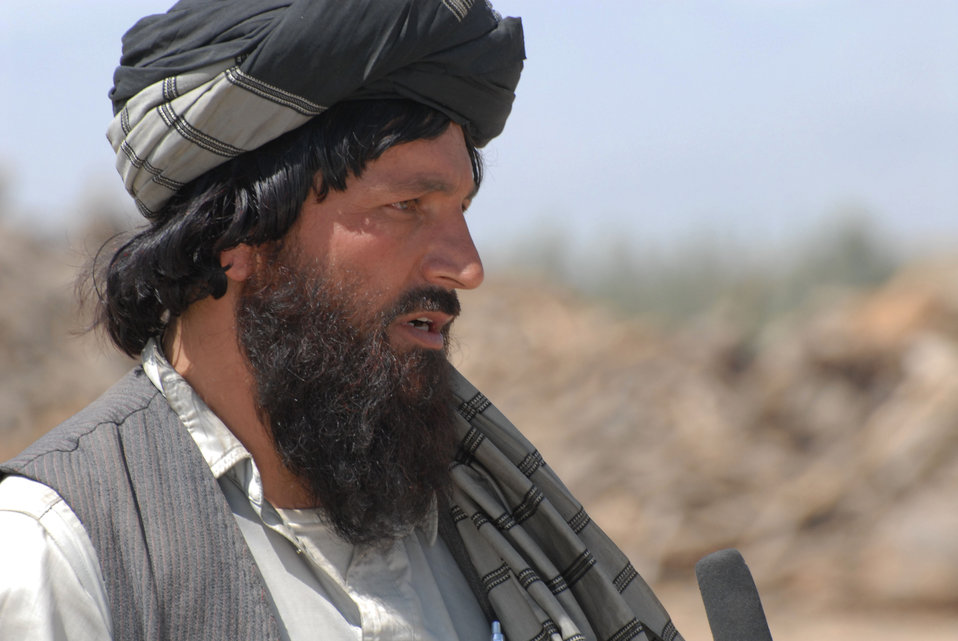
'On the Road' in Paktya Province